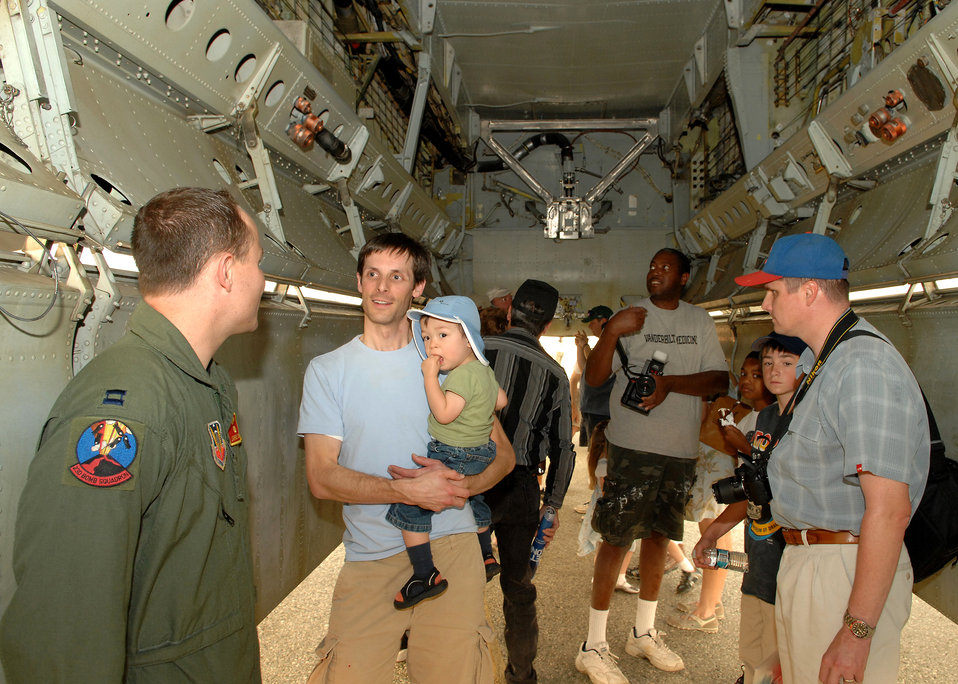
Wings over Long Beach

Capt. Jarred Prier talks to visitors in the bomb bay of an B-52 Stratofortress during Wings Over Long Beach Nov. 15 at Long Beach Airport, Calif. The airshow was part of Air Force Week Los Angeles to showcase the Air Force, its people and the mission throughout the region. Captain Prier is an electronic warfare officer with the 23d Bomb Squadron from Minot Air Force Base, N.D.